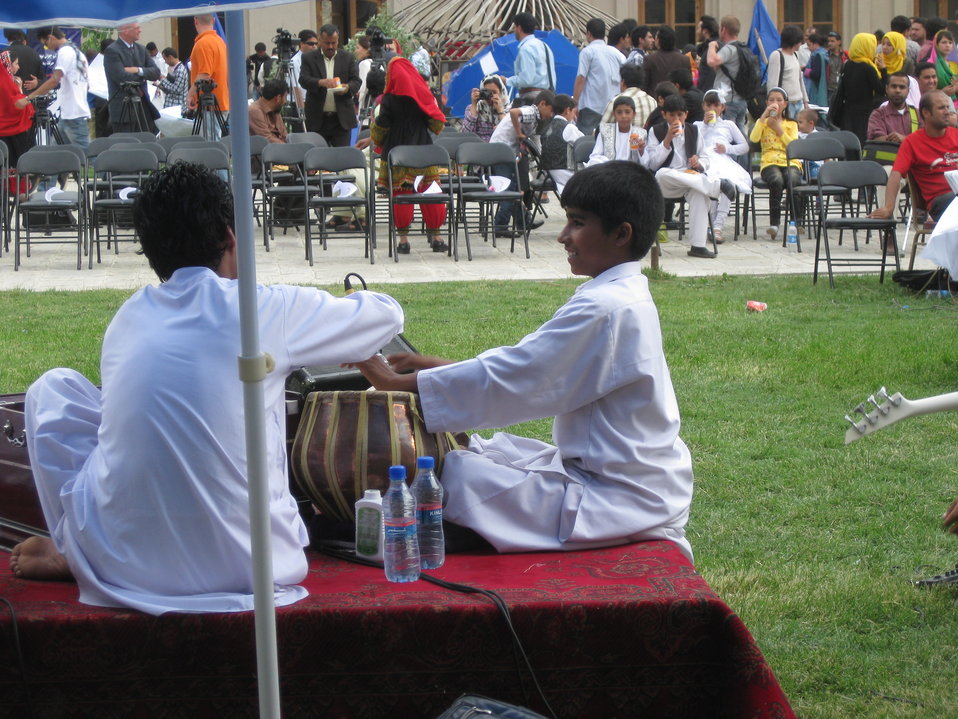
Afghan Youth Voices 089